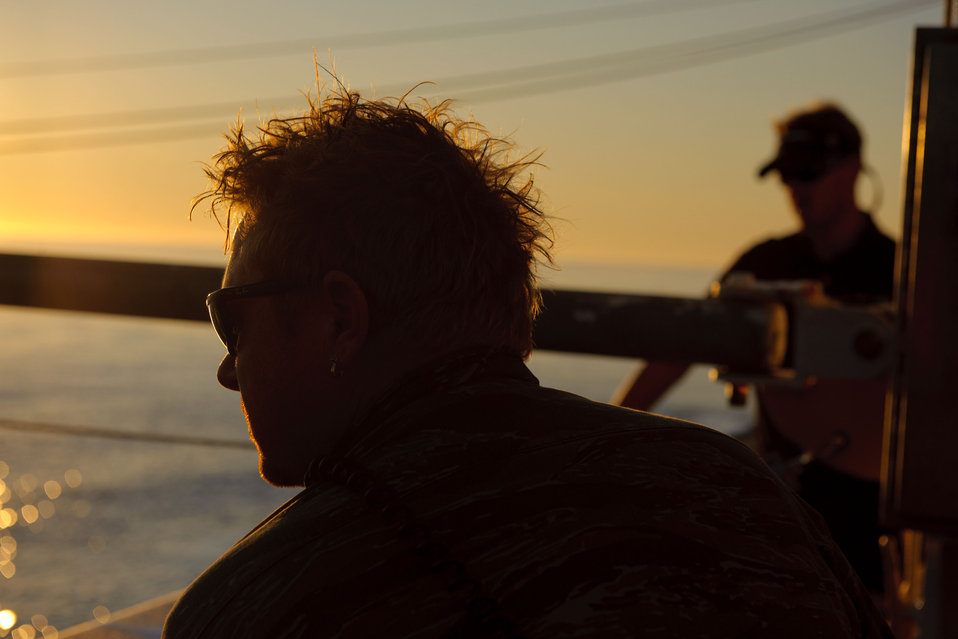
August 9, 2011 Crew technicians help deploy the plankton net

OSV Bold crew members Matt Lowe and John Luniewski